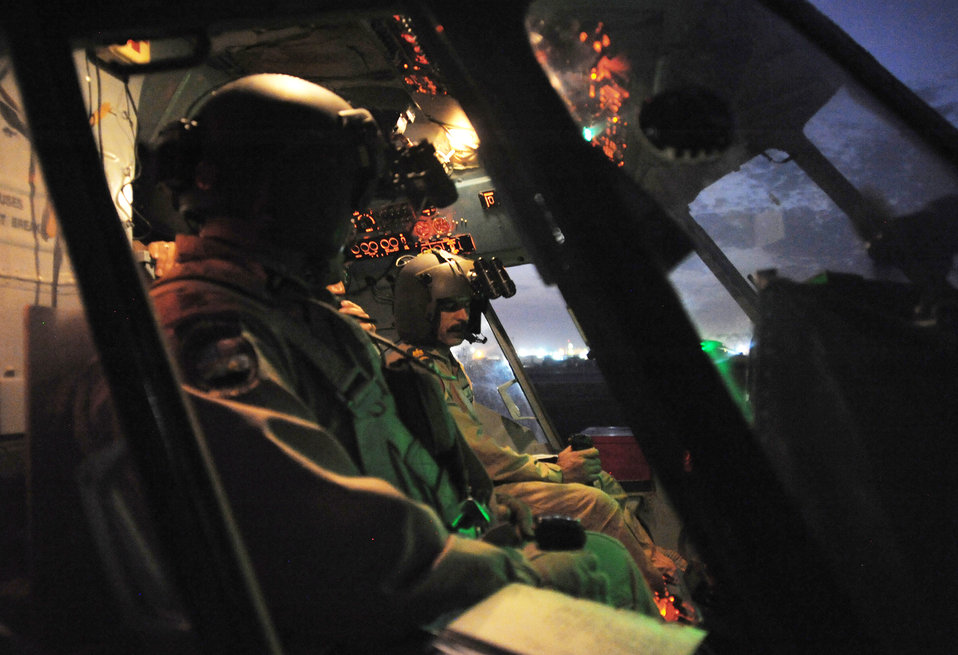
Airmen train, advise, assist Iraqi helicopter pilots

Maj. Christopher Elam observes an Iraqi air force pilot performing preflight procedures here prior to a helicopter mission using night-vision goggles Oct. 7, 2009, at Camp Taji, Iraq. The major teaches them how to operate, preflight and maintain NVGs. U.S. Air Force instructor pilots assigned to the 721st Air Expeditionary Advisory Squadron train, advise and assist Iraqi helicopter pilots around the clock, helping them develop their own air force. Major Elam is a 721st AEAS Mi-17 pilot deployed from Kirtland Air Force Base, N.M. He hails from Evanston, Ill.